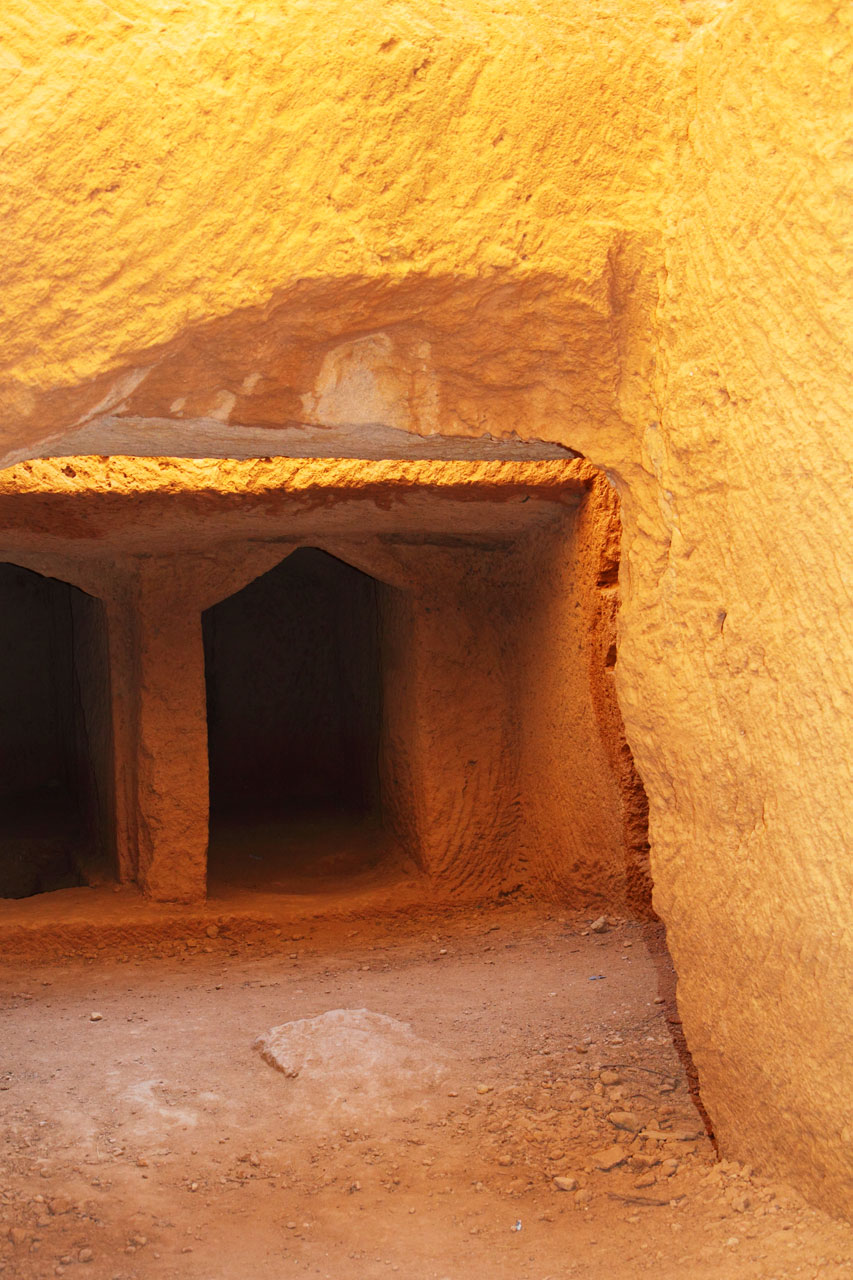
Tombs in rock

Tombs of the kings in paphos - cyprus.